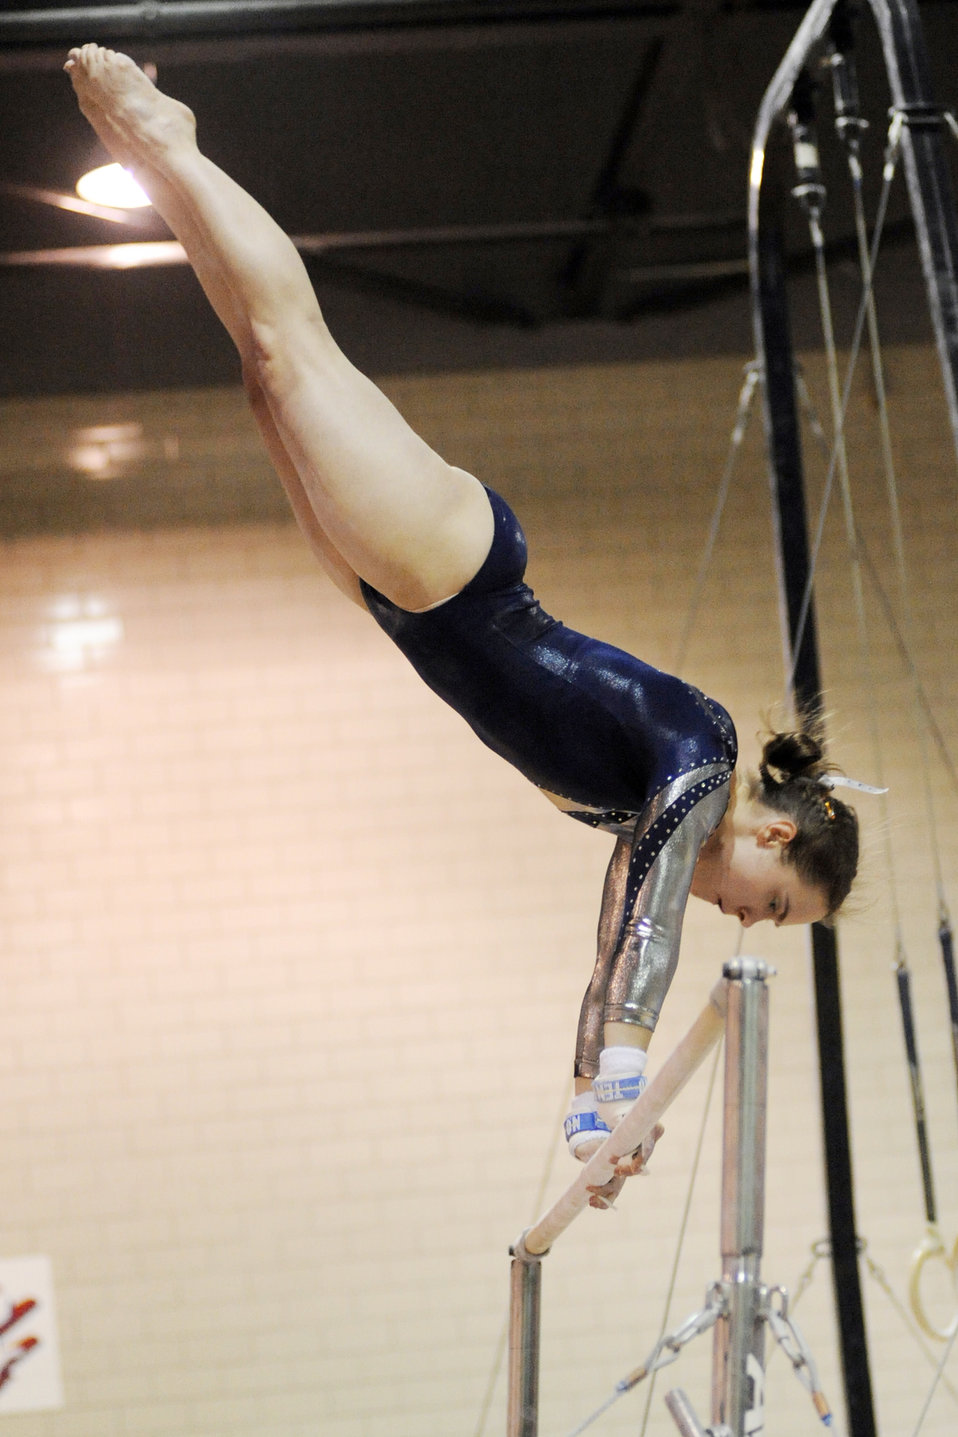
Women gymnasts compete in tri-meet

Falcon sophomore Jenna Dudley performs on the uneven bars during the home tri-meet against Southeast Missouri State and Seattle-Pacific in the U.S. Air Force Academy's Cadet Gym Feb. 20, 2010. Dudley placed third on the uneven bars with a score of 9.675. Air Force placed second in the team competition with a score of 188.00. Southeast Missouri came in first with 194.05 and Seattle Pacific finished with 187.075.